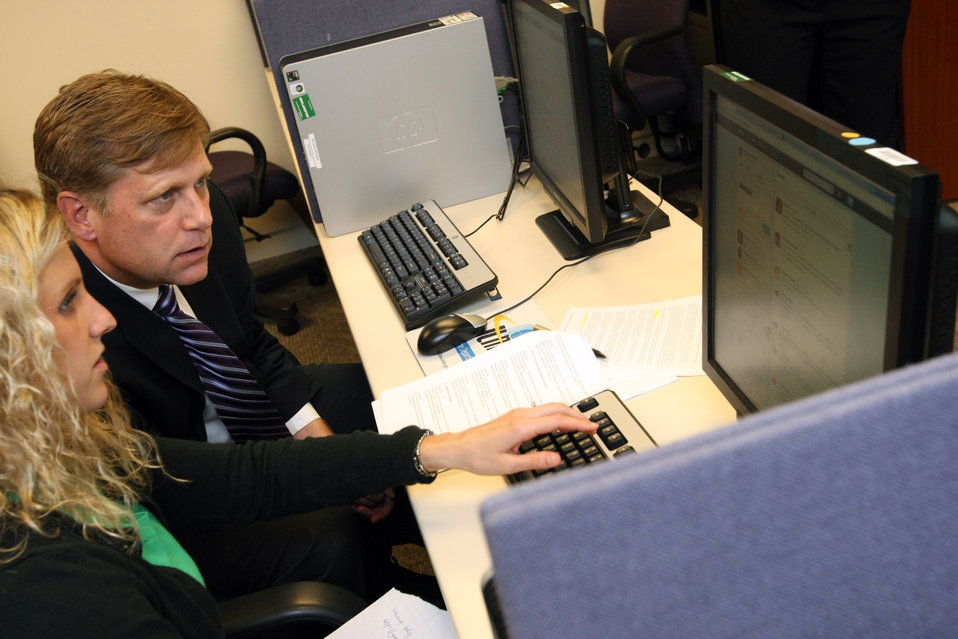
Ambassador McFaul Participates in a Twitter QandA

U.S. Ambassador to Russia Michael McFaul participates in a Twitter Q and A at the U.S. Embassy in Moscow, Russia, September 26, 2012.